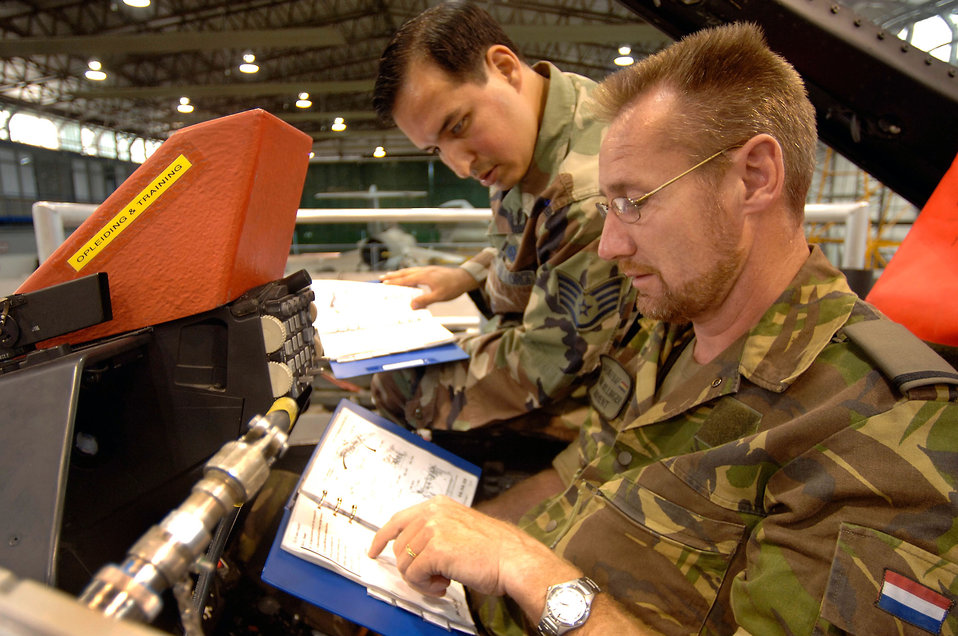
Munitions troops help give Dutch fighters a strike punch

VOLKEL AIR BASE, Netherlands -- Staff Sgt. Carlos Madrid (back) checks the work Dutch air force Chief Warrant Officer Frank Mollinger does during a weapons load exercise. Airmen from both services conduct many such routine exercises each quarter. Working as a team, the Airmen hone their skills uploading special weapons onto Dutch F-16 Fighting Falcon jets, and to ensure they are ready to meet any NATO requirement for a strike mission. Sergeant Madrid is assigned to the 703rd Munitions Maintenance Squadron, and Chief Mollinger is assigned to the 1st Fighter Wing.